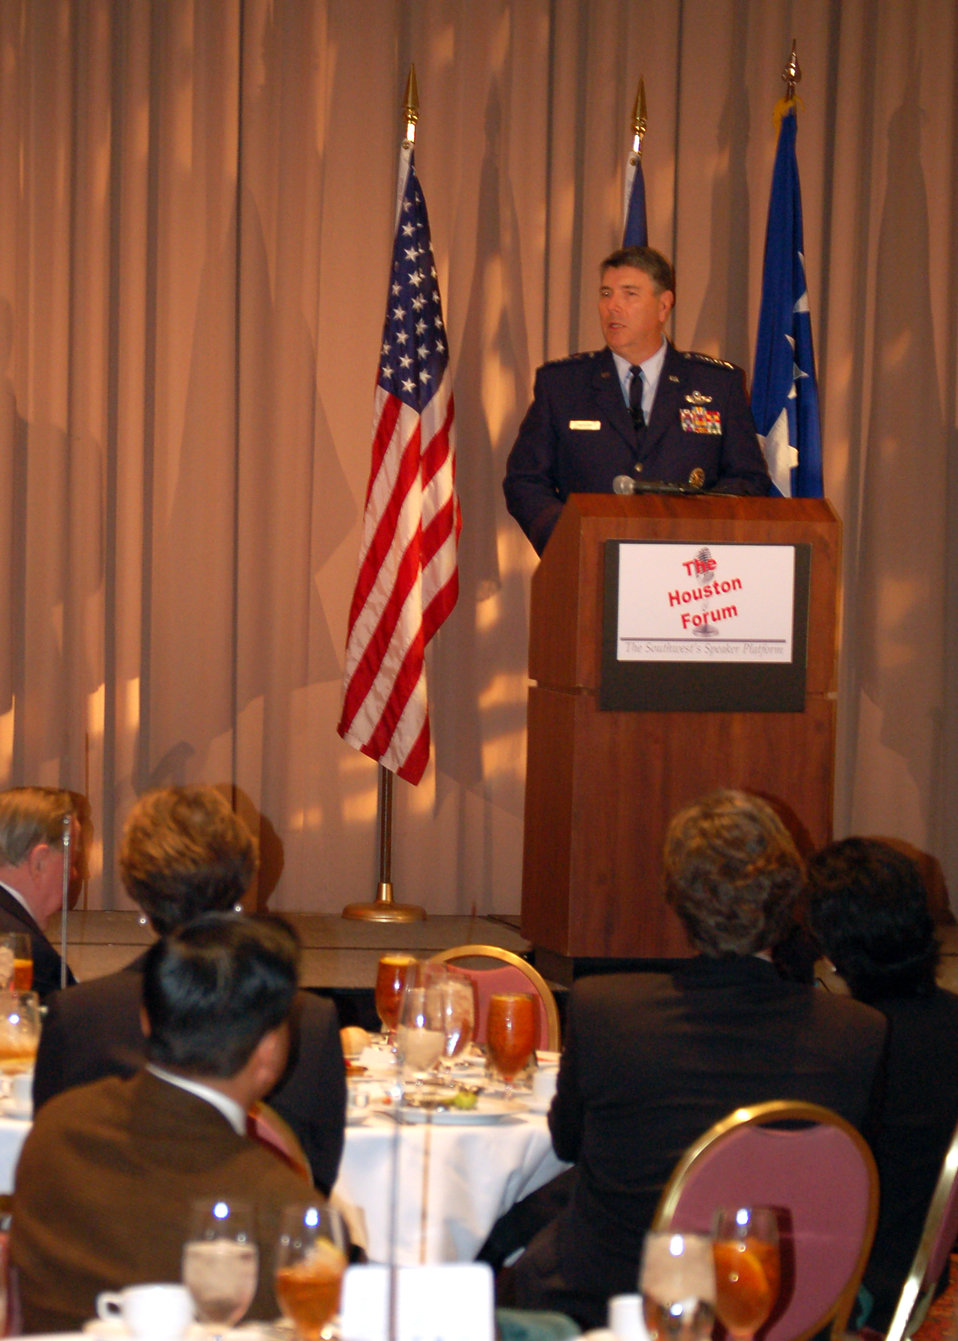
Road Show

General Paul V. Hester, Pacific Air Forces commander, addresses a crowd of Houston Forum members at a JW Marriott hotel auditorium. Dec. 7. General Hester was in town for the